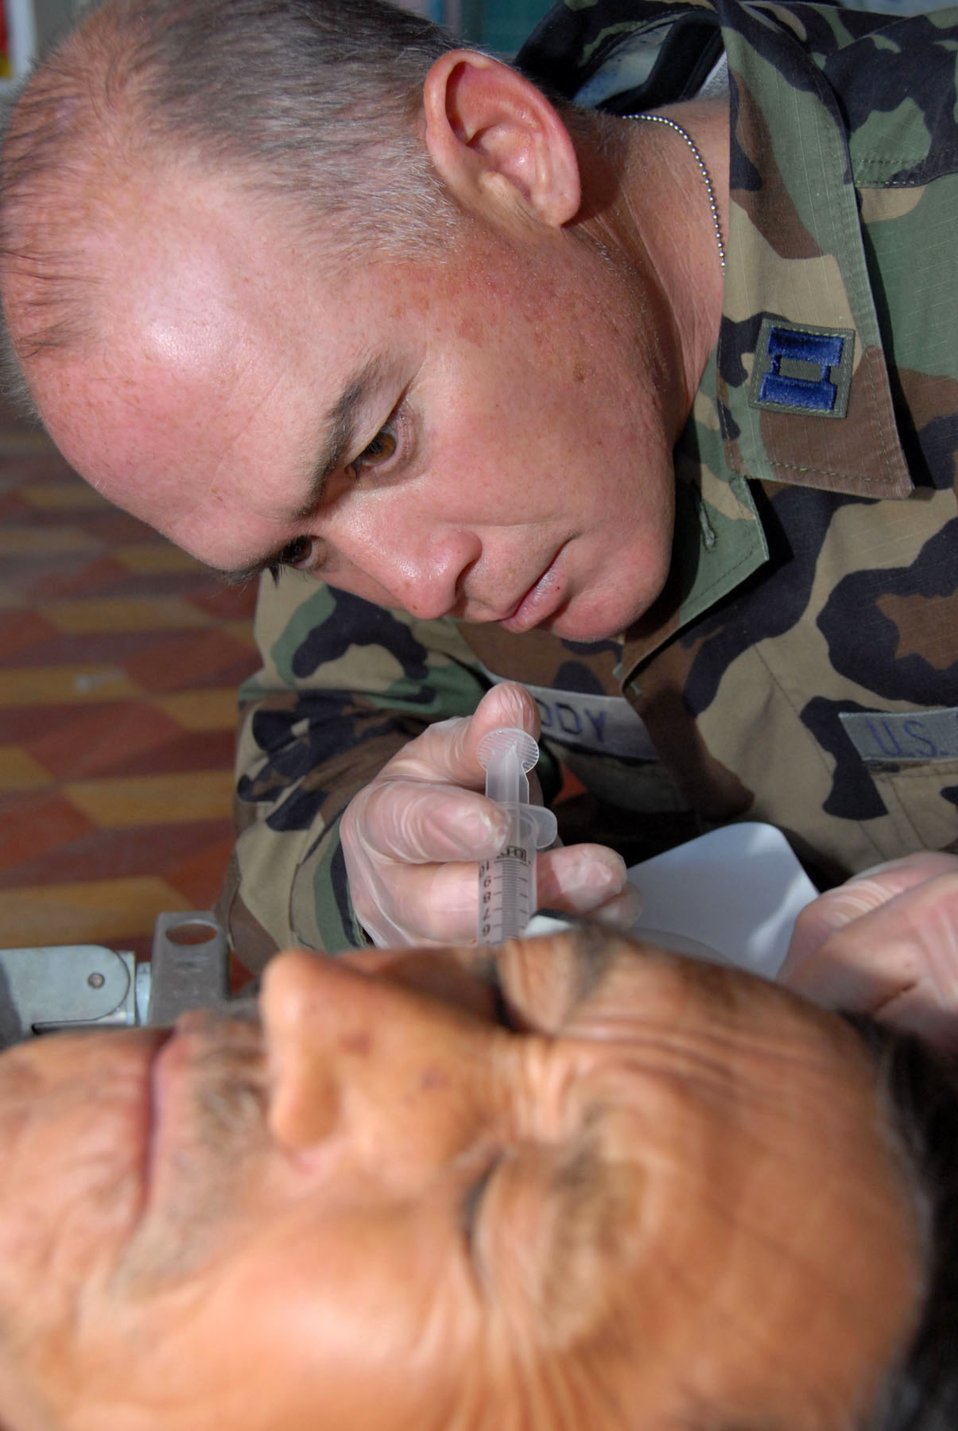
Reservists take medical care to Guatemalans

Capt. Michael Priddy irrigates the ear canal a Guatemalan patient during the New Horizons Medical Readiness Training Exercise conducted April 14 through 28 in the region of San Marcos, Guatemala. Captain Priddy is a physician assistant with the 445th Aerospace Medicine Squadron, Wright Patterson Air Force Base, Ohio.